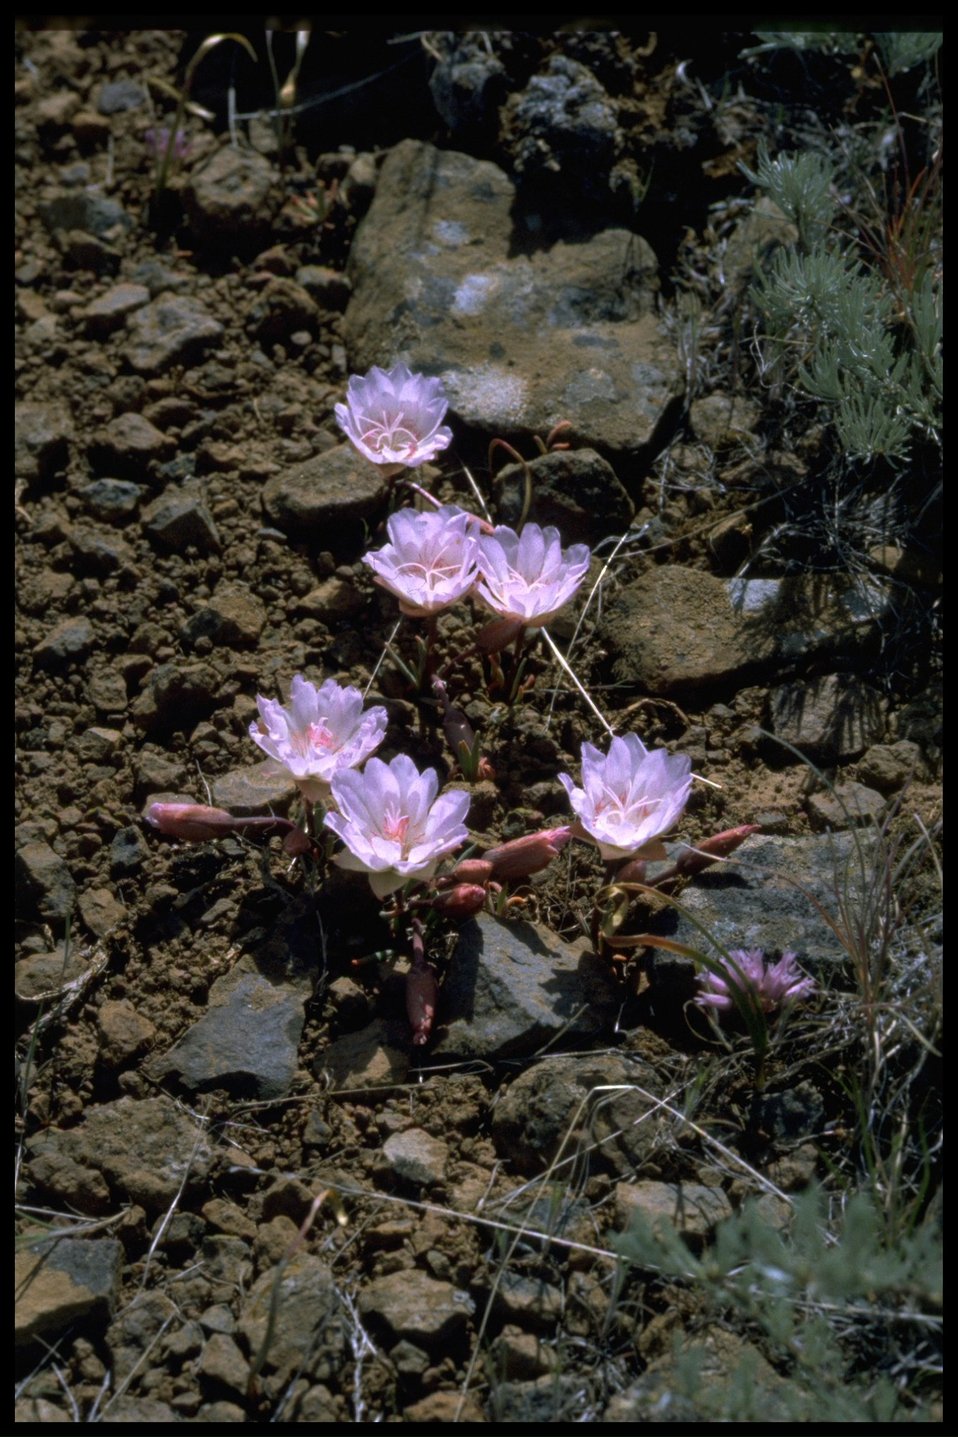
Farshot of Bitterroot wildflowers and buds